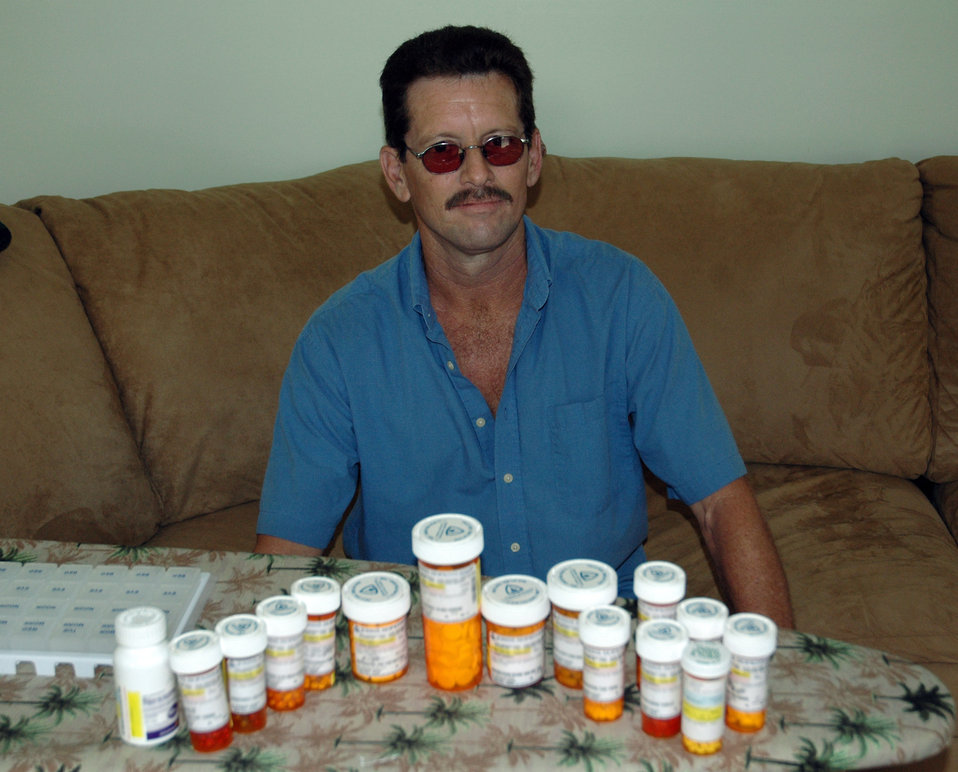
Dover Airman donates kidney to fiance

Staff Sgt. Mark Shortt displays the takes 15 medications he takes six times a day at his home in Dover, Del. He underwent a kidney transplant Sept. 22 at John Hopkins Hospital in Baltimore. In 2006, he'd contracted a viral antibody, which attacked both his kidneys leading to their failure in August 2007. Now that he's had the transplant, he is off dialysis but must take medication for the rest of his life. He is a supply technician with the Air Force Reserve's 512th Civil Engineer Squadron at Dover Air Force Base, Del.